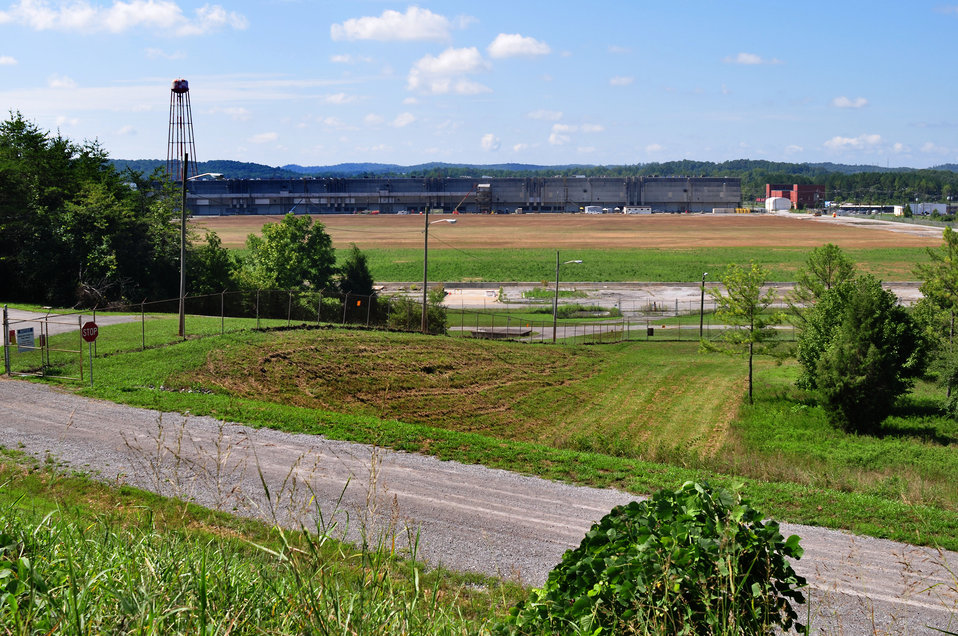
Oak Ridge Finishes Largest Site Demolition to Date

July 2012 - This month, the Oak Ridge Environmental Management (EM) program finished the final phase of the Building K-33 demolition project. Workers with LATA-Sharp Remediation Services, the prime contractor for the project, removed areas of contaminated soil, backfilled the area with topsoil and seeded the land with grass. In April, they removed a 32-acre concrete slab that served as the foundation for the former 1.4 million-square-foot former gaseous diffusion plant in the East Tennessee Technology Park (ETTP). Constructed in 1954, the K-33 facility enriched uranium until 1985.